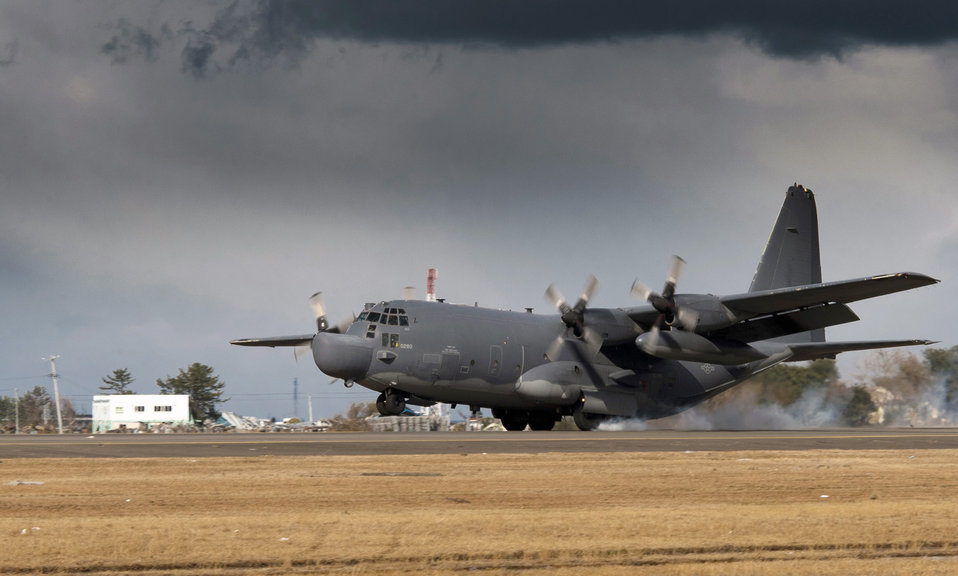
MC-130H Combat Talon II arrives at Sendai Airport

An MC-130H Combat Talon II pilot lands March 16, 2011, at Sendai Airport, Japan.